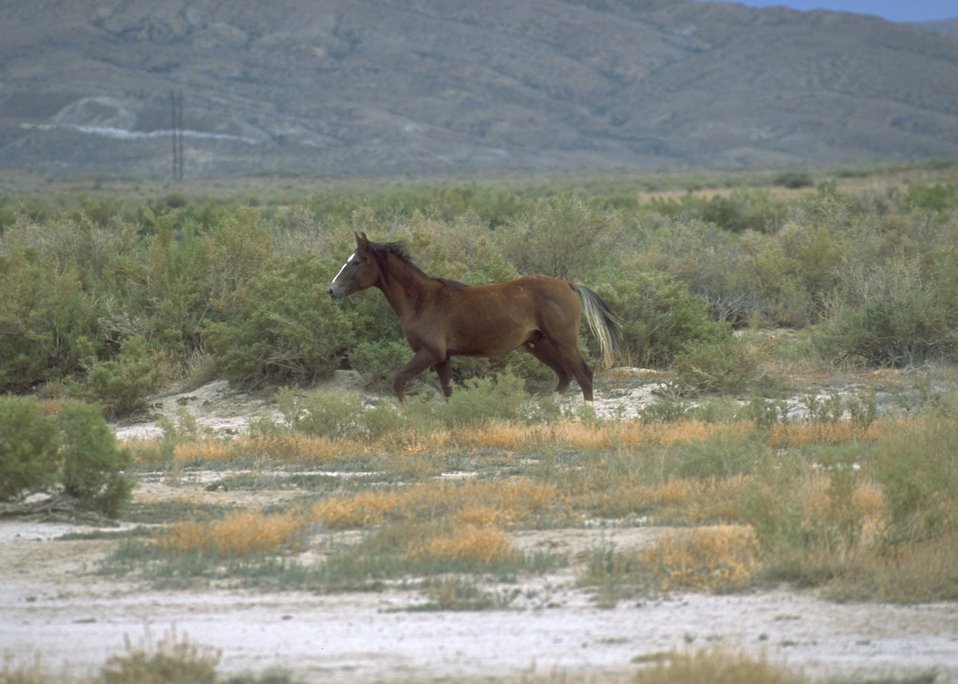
Wild horses, Rock Springs Field Office.